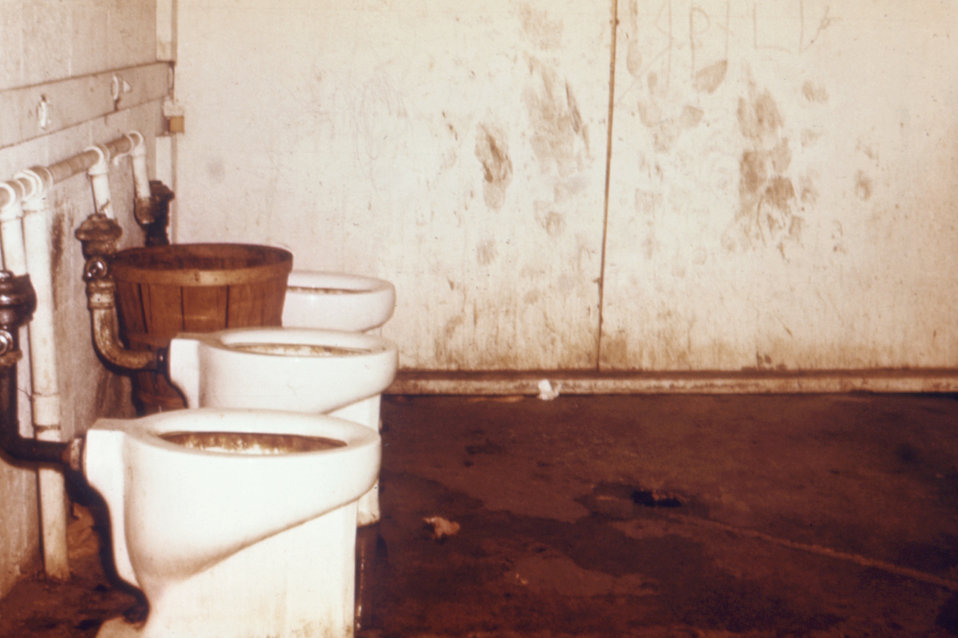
This was a slide from a series used to familiarize public health inspectors with sanitation conditions of migrant worker camps.